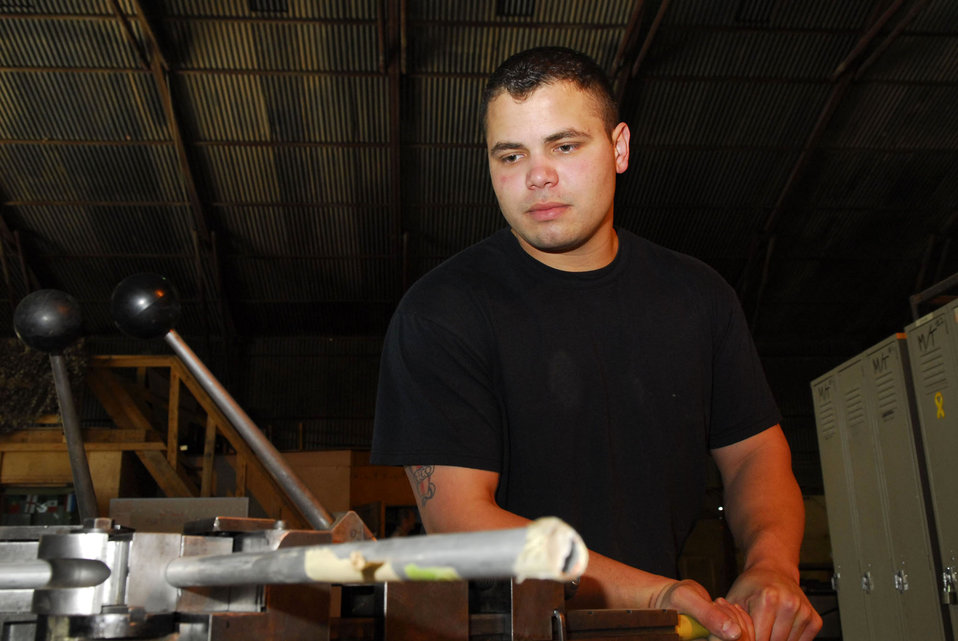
Fabricating the force

Staff Sgt. Adrian Lopez creates a hydraulic line for a C-130 Hercules using a tube bender Nov. 14 at Balad Air Base, Iraq. The fabrication shop creates many items from scratch for all military vehicles including Army assets. Sergeant Lopez is a 332nd Expeditionary Maintenance Squadron aircraft structural maintainer and is deployed from Spangdahlem Air Base, Germany.